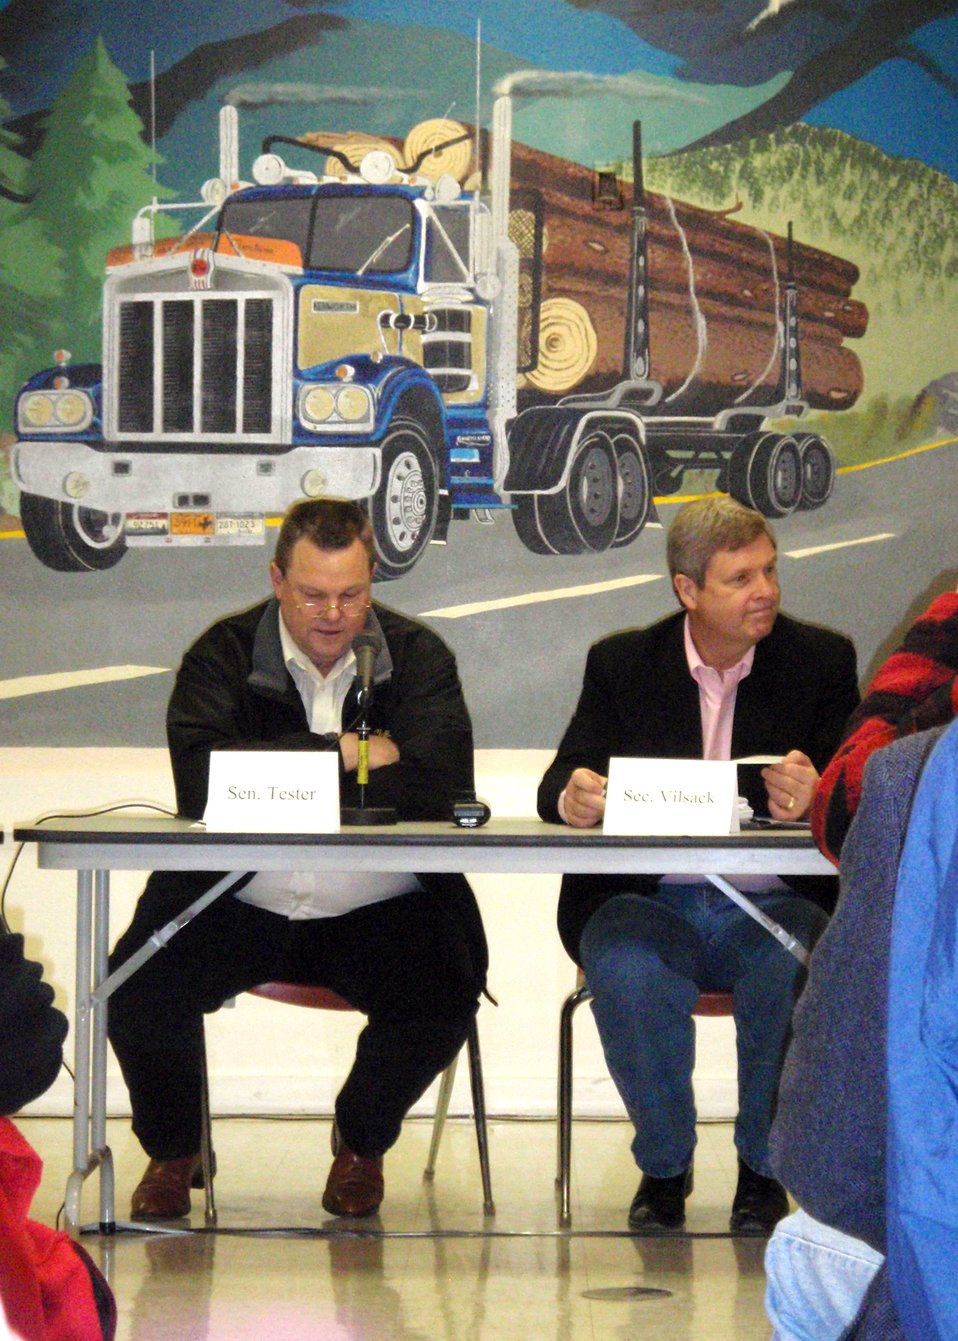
A Public meeting held by Agriculture Secretary Tom Vilsack (r) and U. S. Senator Jon Tester (D-MT) (L) in Deer Lodge, Montana on March 6, 2010 to discuss Secretary Vilsack's vision for healthy forests and the bark beetle problem infested areas in southwestern Montana. USDA photo 10di1257-05